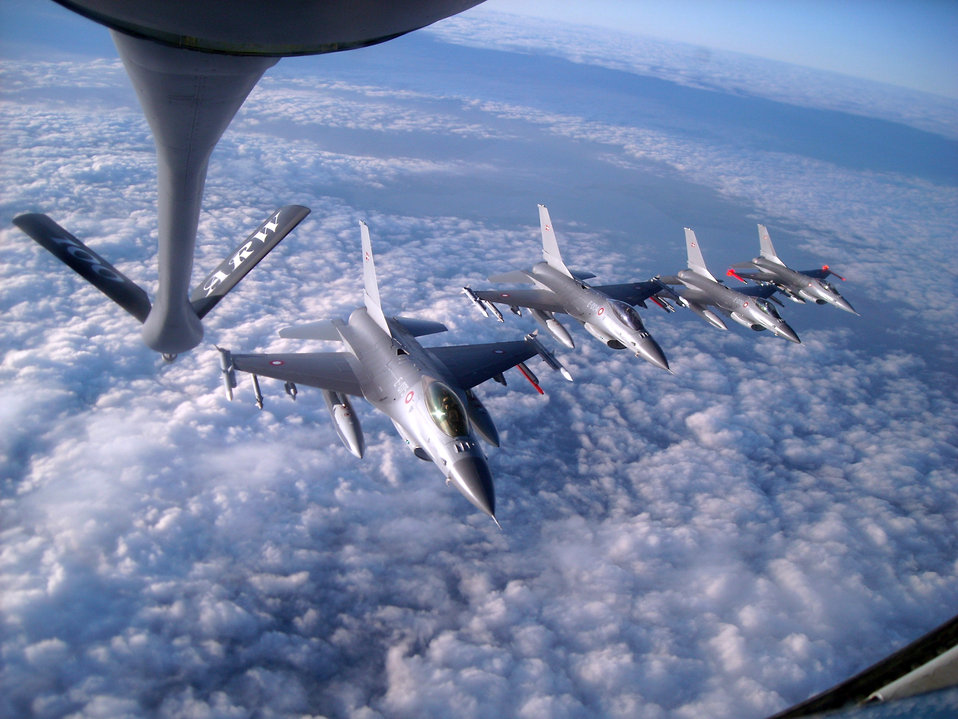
Refueling lifeline of U.S., NATO air ops

Four Royal Danish air force pilots fly F-16 Fighting Falcons in formation behind a 100th Air Refueling Wing KC-135 Stratotanker during a refueling mission over Denmark Dec. 8, 2009. In all, the KC-135 refueled 30 aircraft and pumped more than 40,000 tons of fuel.